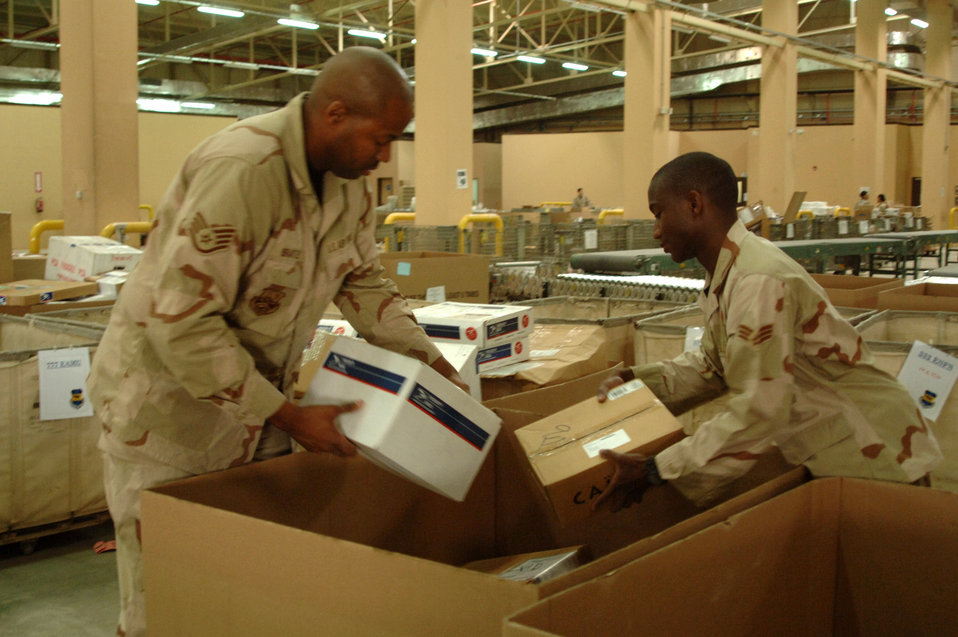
Airmen provide 1st class postal service to thousands

Staff Sgt. Kelvin Brantley (left) and Senior Airman Kevin Goldman sort inbound packages April 17 at the Joint Military Mail Terminal at Balad Air Base, Iraq. Airman at the JMMT receive approximately 325,000 pounds of incoming mail each week. Every day, two aircraft are used to deliver and pick up an average of 18 pallets of mail. The Airmen are assigned to the 332nd Expeditionary Communications Squadron.